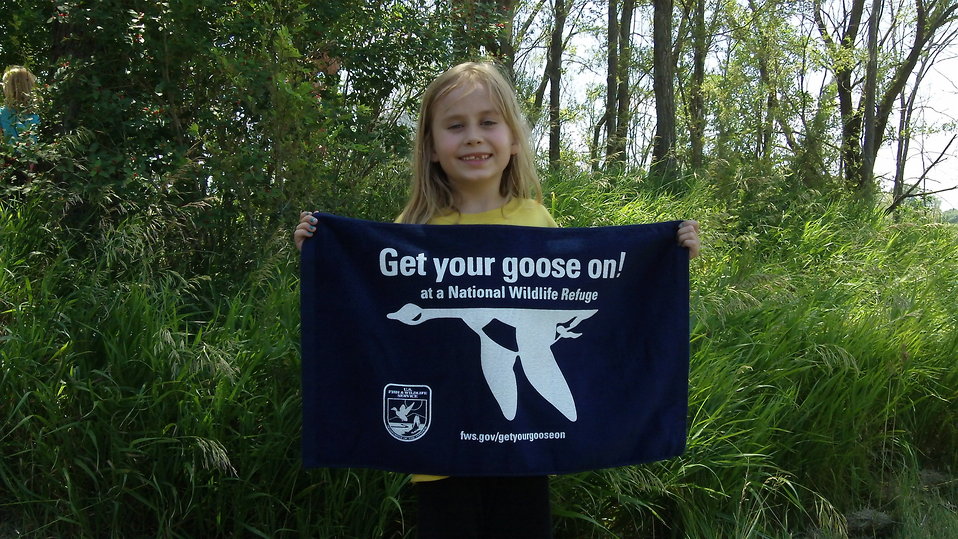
Get Your Goose On!

Photo taken at Huron Wetland Management District in east-central South Dakota.